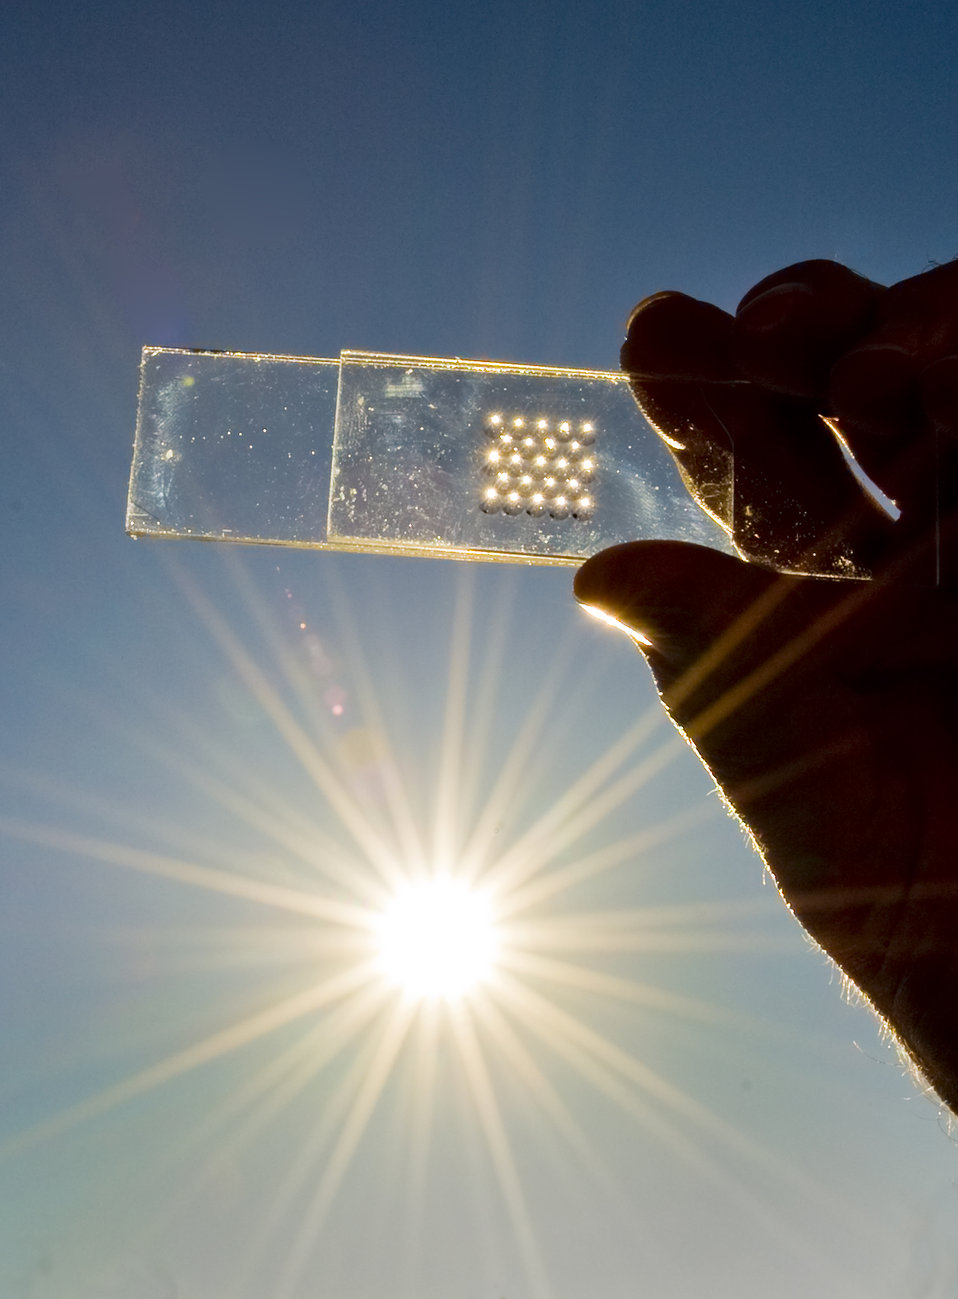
Glitter-Sized Solar Cells

Researchers at Sandia National Laboratories developed tiny glitter-sized photovoltaic cells that are only 14 to 20 micrometers thick (a human hair is approximately 70 micrometers thick), yet perform at about the same efficiency as solar devices that use 100 times more silicon. Sandia’s microsystems enabled photovoltaics, also known as “solar glitter,” won a 2012 R&D 100 award.